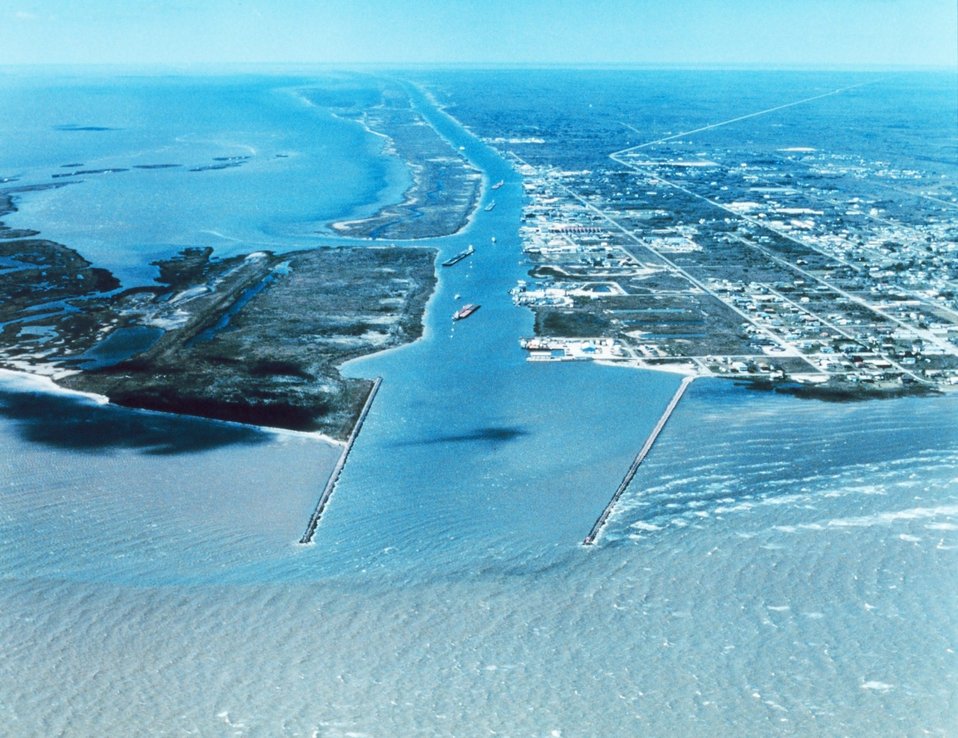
2827 North Latitude 9624 West Longitude.